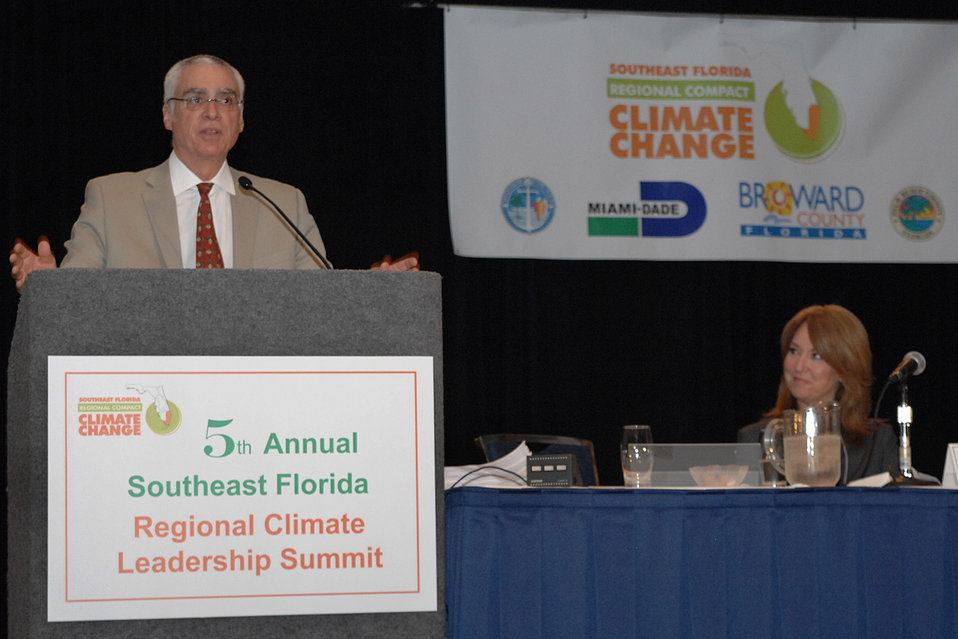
Deputy Administrator Perciasepe at Climate Change Summit

Deputy Administrator Bob Perciasepe delivered the keynote address at this year’s Southeast Florida Regional Climate Leadership Summit in Fort Lauderdale, Florida